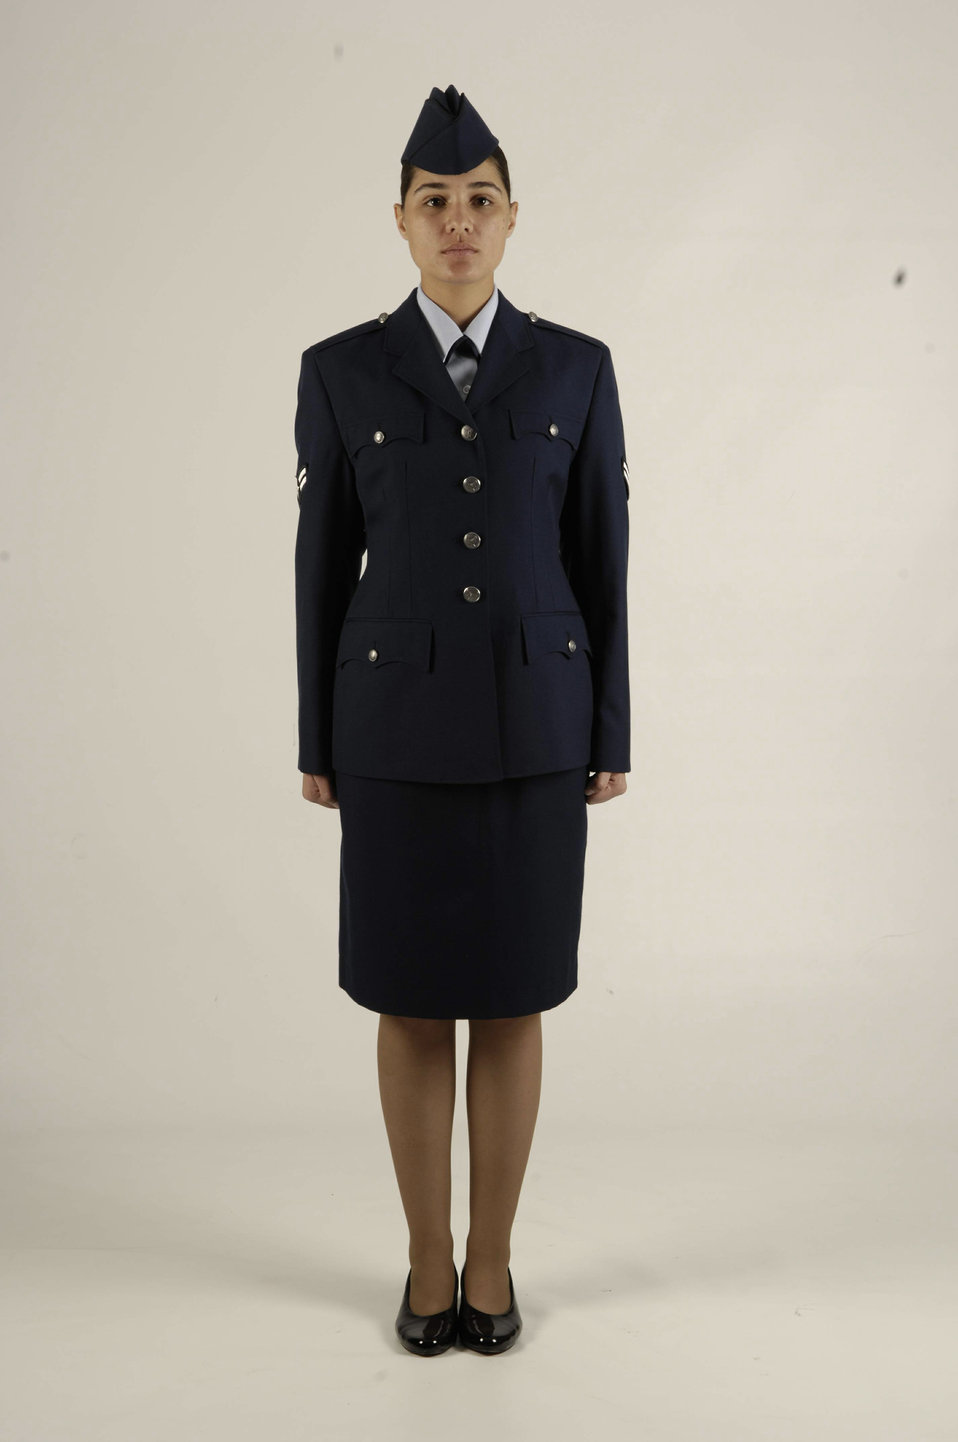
Heritage Coat production uncertain despite favorable reviews

Officer and enlisted male and female participants wear-tested three variant issue designs of the proposed Heritage Coat. The differences between the coats were a fabric belt and slide buckle, the honor guard style belt and buckle, and the four-button, no belt style.